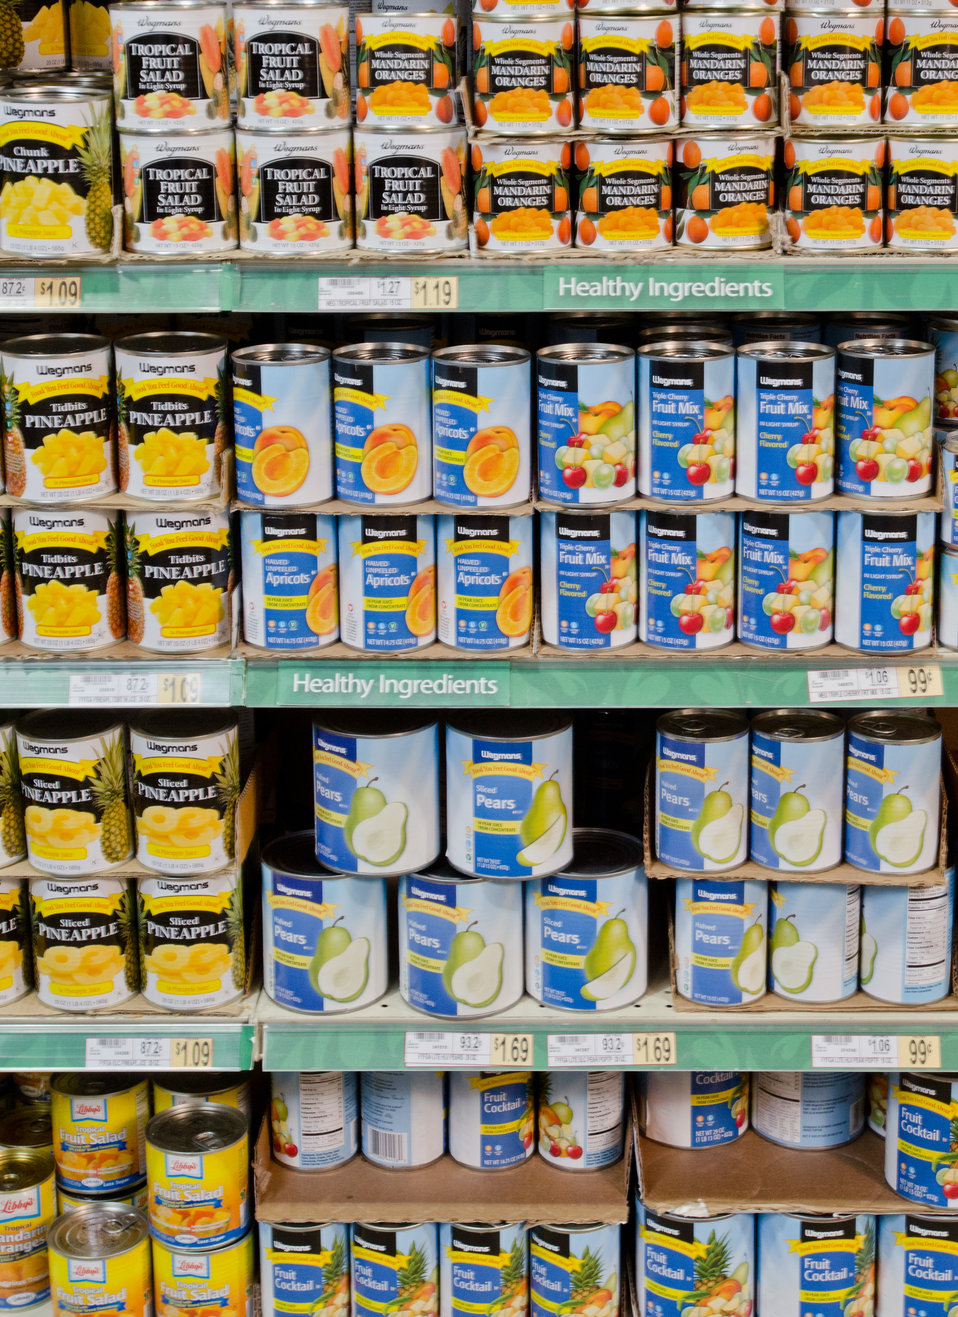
Canned goods at a grocery store in Fairfax, Virginia, on March 3, 2011.